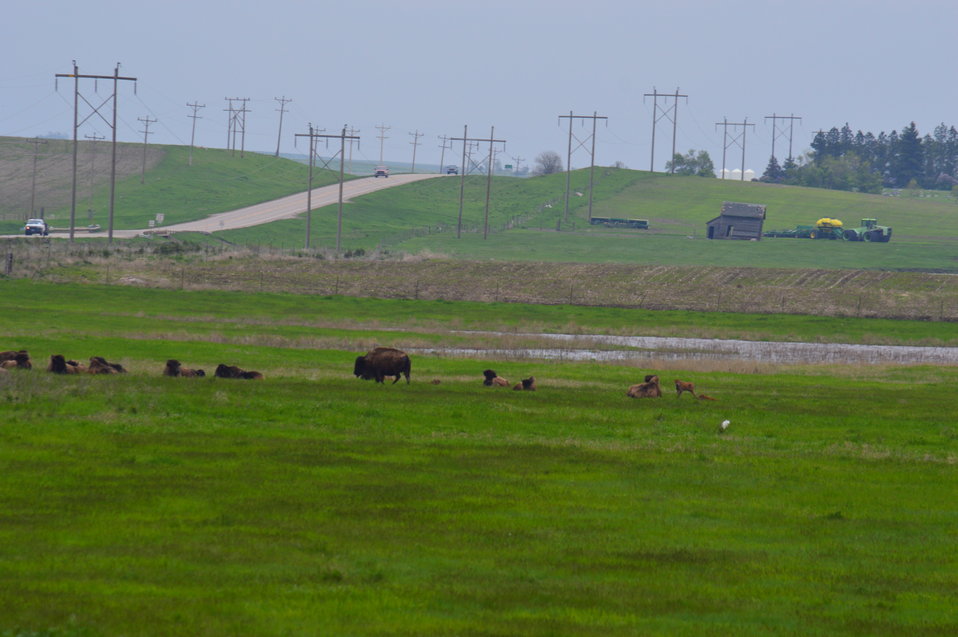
Bison herd

Scenery and wildlife at Lake Ilo National Wildlife Refuge in North Dakota